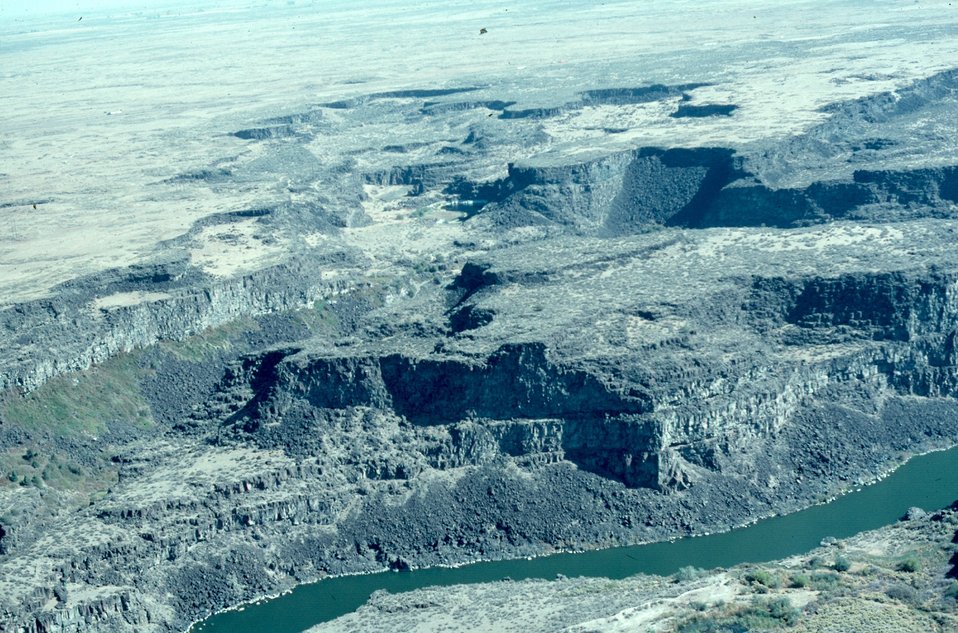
Erosion NE of Twin Falls Shoshone Field Office USRD Upper Snake River District